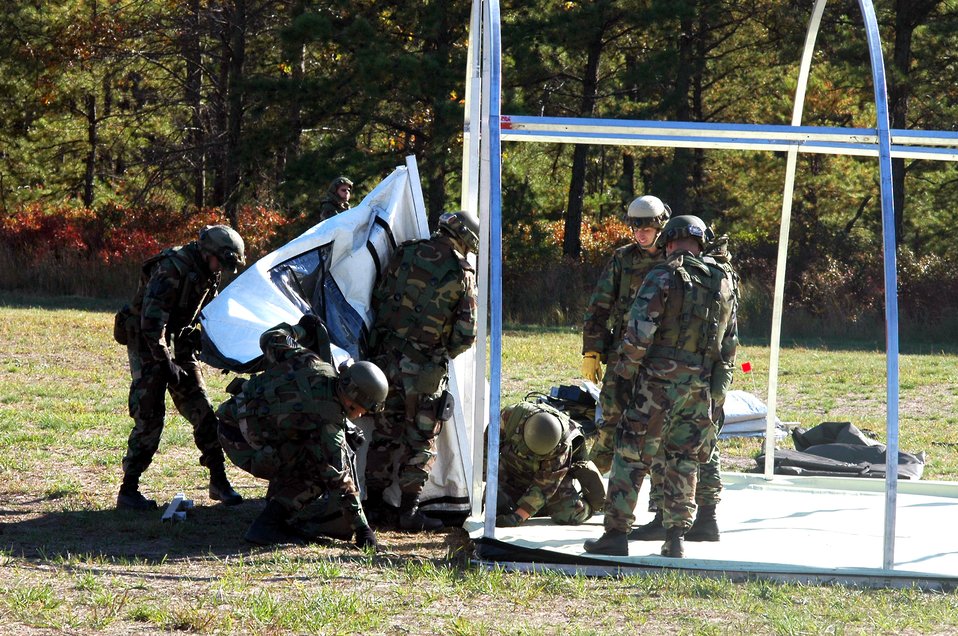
Eagle Flag preps Airmen for combat

Airmen participating in Air Force Exercise Eagle Flag 07-1 as part of the